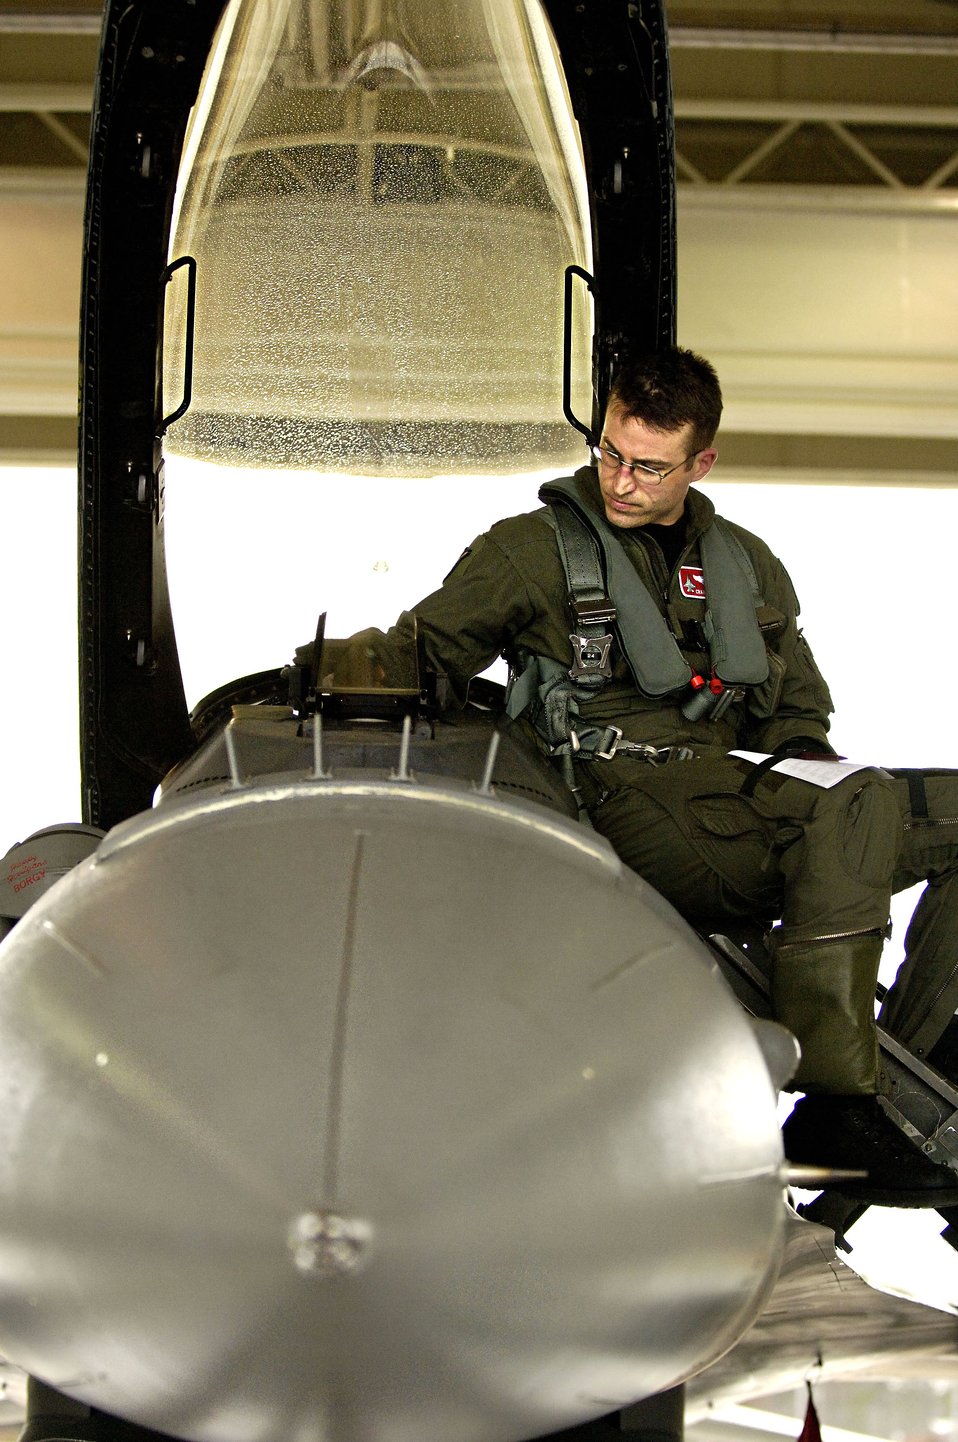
Safety milestone

Maj. Craig Borgstrom exits his F-16 Fighting Falcon after completing a practice scramble at Langley Air Force Base, Va., Monday, March 6, 2006. The 119th Fighter Wing marked 70,000 hours of accident-free flight.